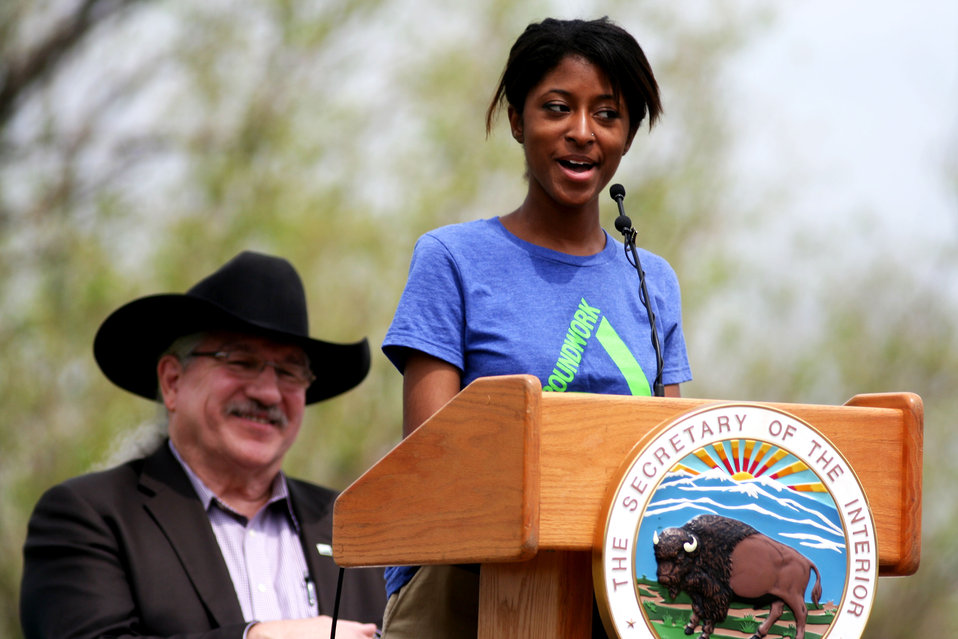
Butch Blazer and Makalah Emanuel

USDA Deputy Undersecretary Butch Blazer listens while Groundwork Denver's Makalah Emanuel during a ceremony to announce youth conservation funding at Rocky Mountain Arsenal.